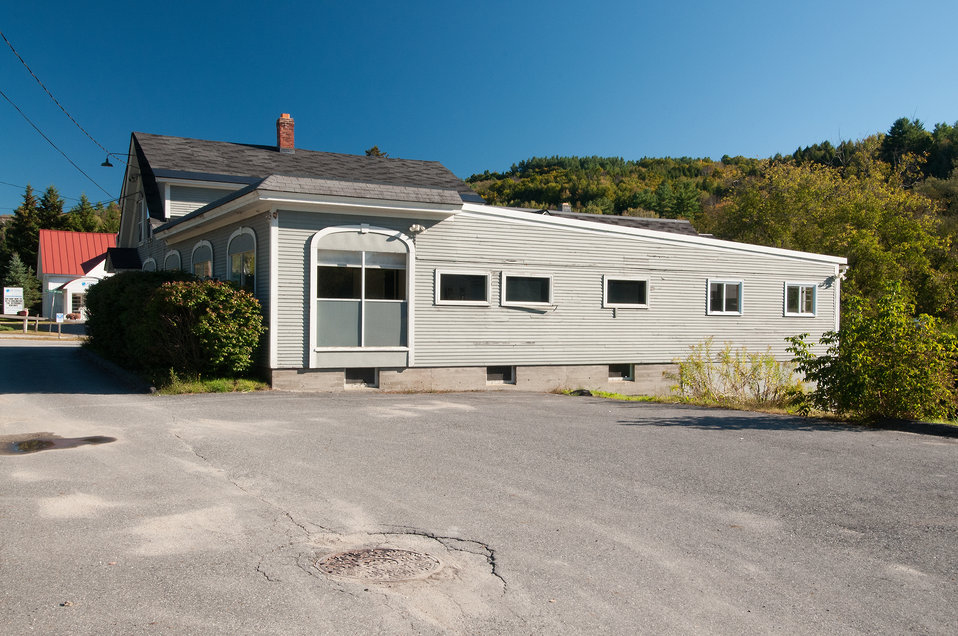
Through the assistance of a U.S. Department of Agriculture (USDA) Rural Development (RD) Community Facilities Grant the Central Vermont Community Action Council whose mission is to create economic security for low to moderate income residents in rural Central Vermont consolidated many of its programs and more than half of its employees into one campus in downtown Barre, VT on Sep. 17, 2013.